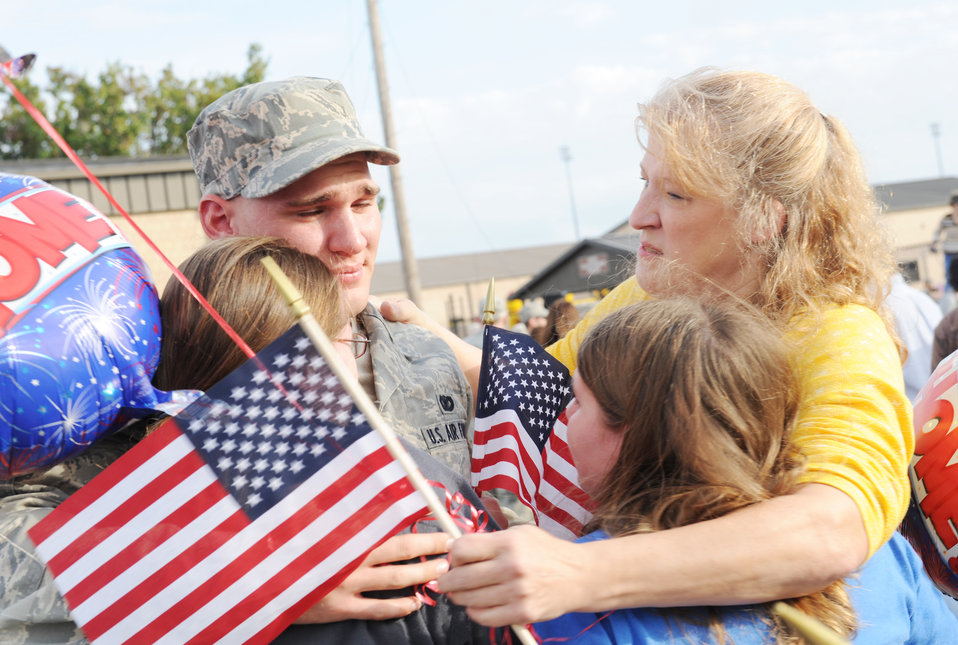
Moody Airmen return home

Airman 1st Class James Leach, 822nd Security Forces Squadron member, hugs his mother Rebecca and sisters Jillian and Samantha, after returning home from a deployment to Iraq, Dec. 8, 2009, at Moody Air Force Base, Ga. The 822nd SFS was deployed to Camp Bucca, Iraq.